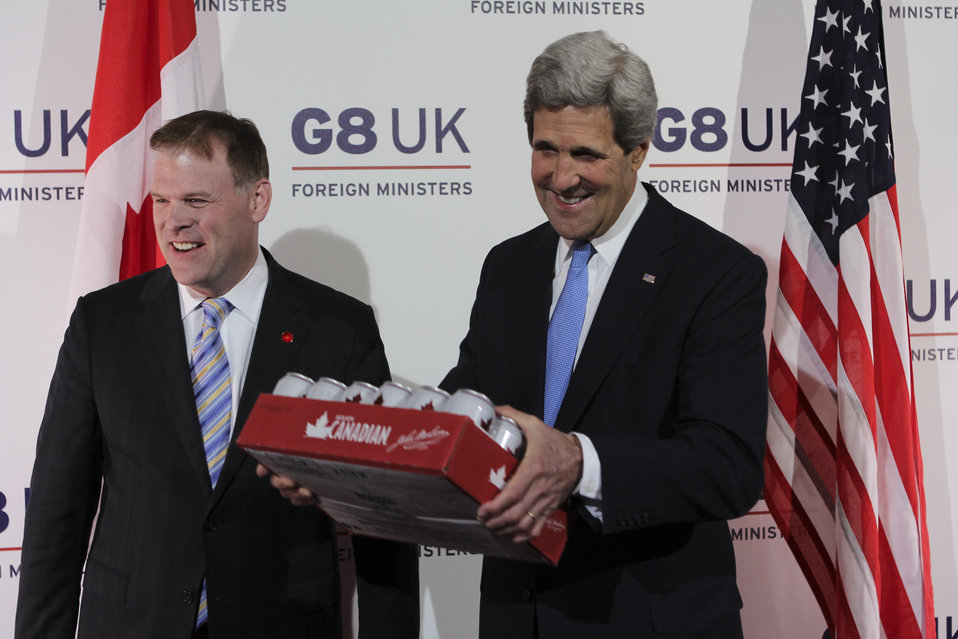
Secretary Kerry Receives a Case of Beer from Canadian Foreign Minister John Baird

U.S. Secretary of State John Kerry receives a case of beer from Canadian Foreign Minister John Baird, fulfilling the terms of a bet made over a US-Canada women's hockey match, during a break in the G8 ministerial meetings in London, United Kingdom, April 11, 2013.